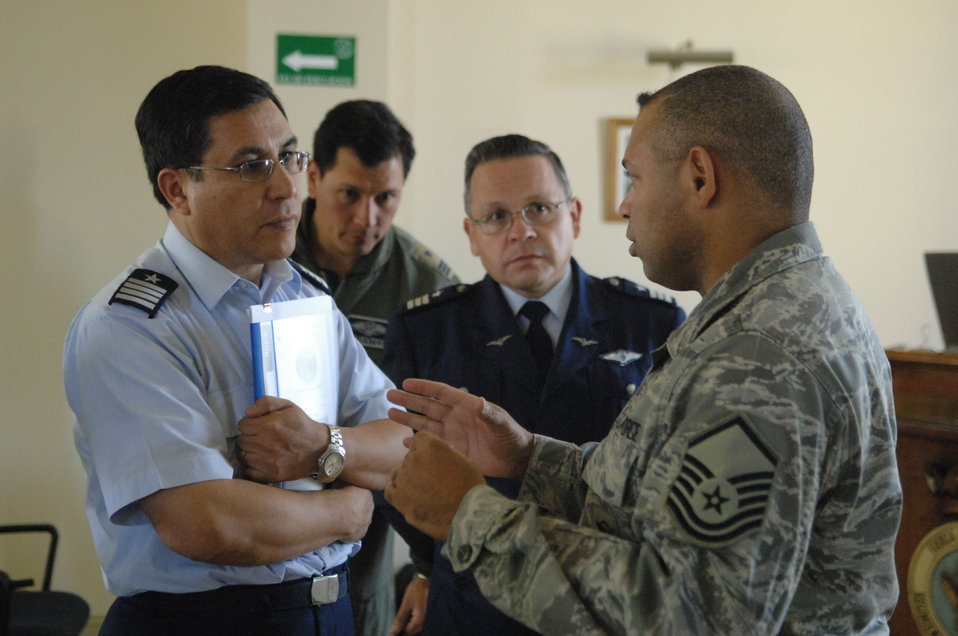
Operation Southern Partner

Master Sgt. Edward Nin, a force protection noncommissioned officer from 12th Air Force at Davis Monthan Air Force Base, Ariz., discusses highlights of an Oct. 29 Operation Southern Partner subject matter exchange with the Chilean air base chief of security forces Col. Randot Espinoza, while the group Commandant, Col. Anselmo Salas (center) looks on. Operation Southern Partner is an in-depth, two-week subject matter exchange emphasizing partnership, cooperation and sharing of information with partner nation Air Forces in Latin America.